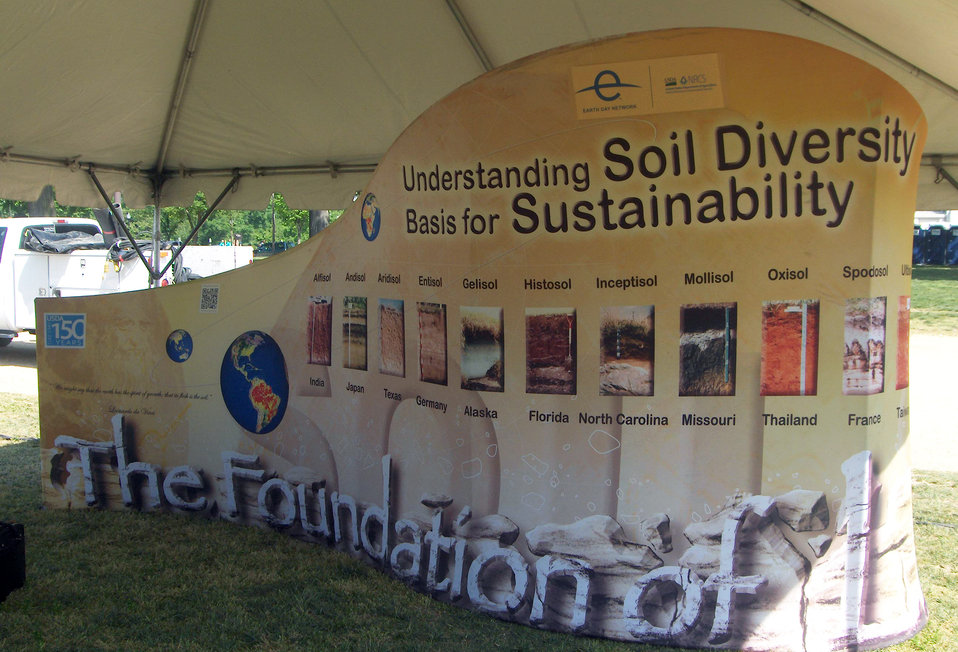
U.S. Department of Agriculture (USDA) Natural Resources Conservation Service (NRCS) display for Earth Day 2012 on the National Mall in Washington, D.C., on Sunday, April 22, 2012.